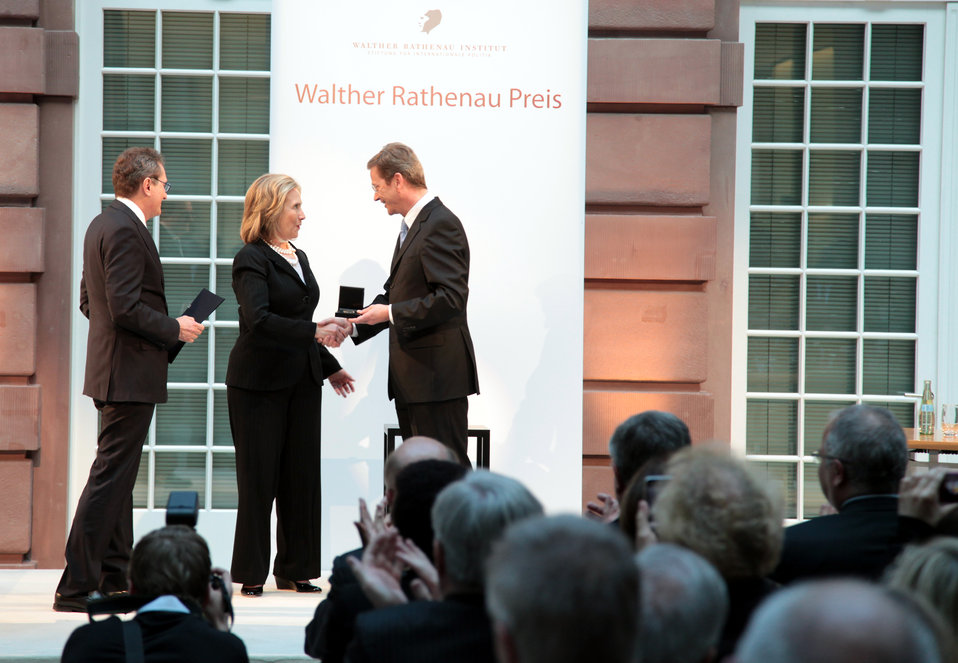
Secretary Clinton Receives the Rathenau Prize

U.S. Secretary of State Hillary Rodham Clinton receives the Walther Rathenau Award from German Foreign Minister Guido Westerwelle, in Berlin, Germany, on April 15, 2011.